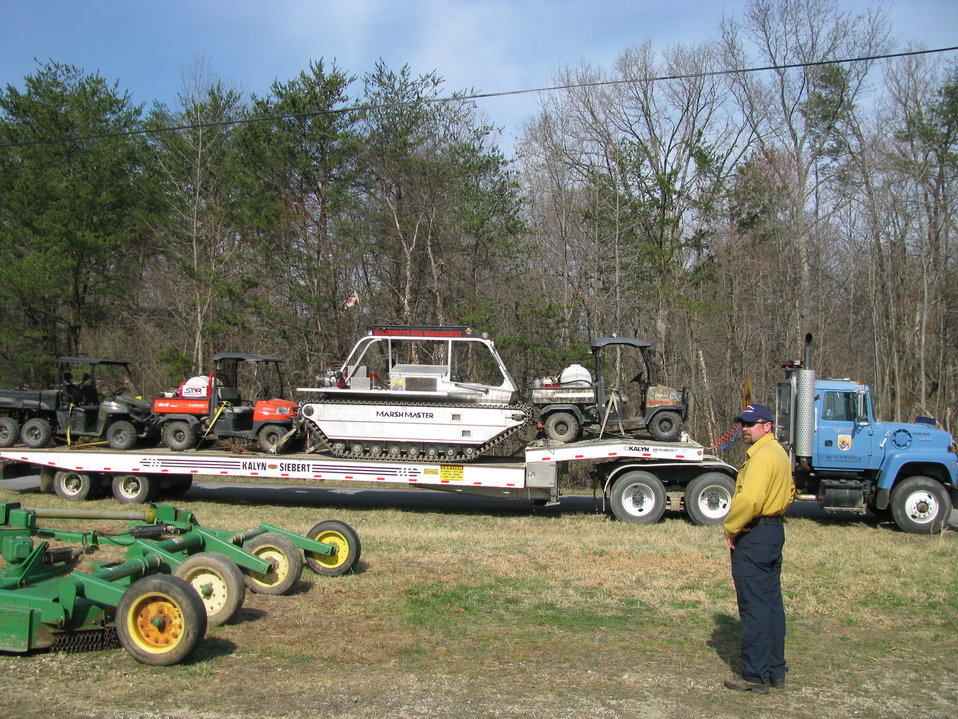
Fire Mangagement Heavy Equipment

Laurel, Maryland, April 14, 2012: Fire Management Officer Art Canterbury of Blackwater National Wildlife Refuge stands among equipment his refuge provided to help do a controlled burn. The burn, at Patuxent Research Refuge, was to maintain native grasslands, remove woody vegetation, and control invasive species such as Korean Lespedeza.